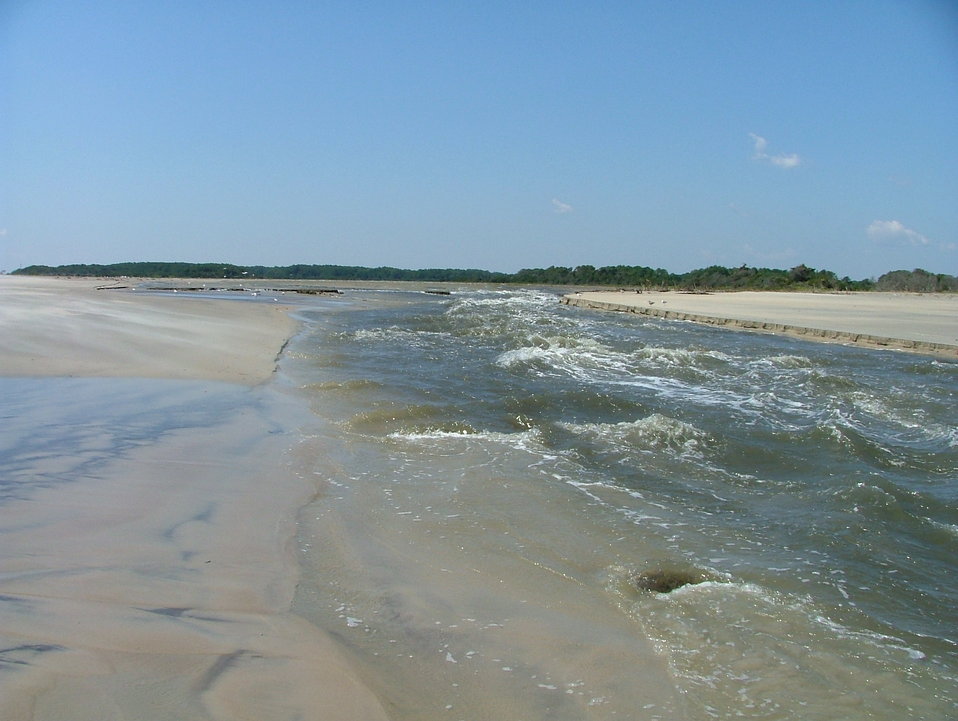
Breach at Swans Cove

Breach caused by Hurricane Irene at Swans Cove at Chincoteague National Wildlife Refuge in Virginia.